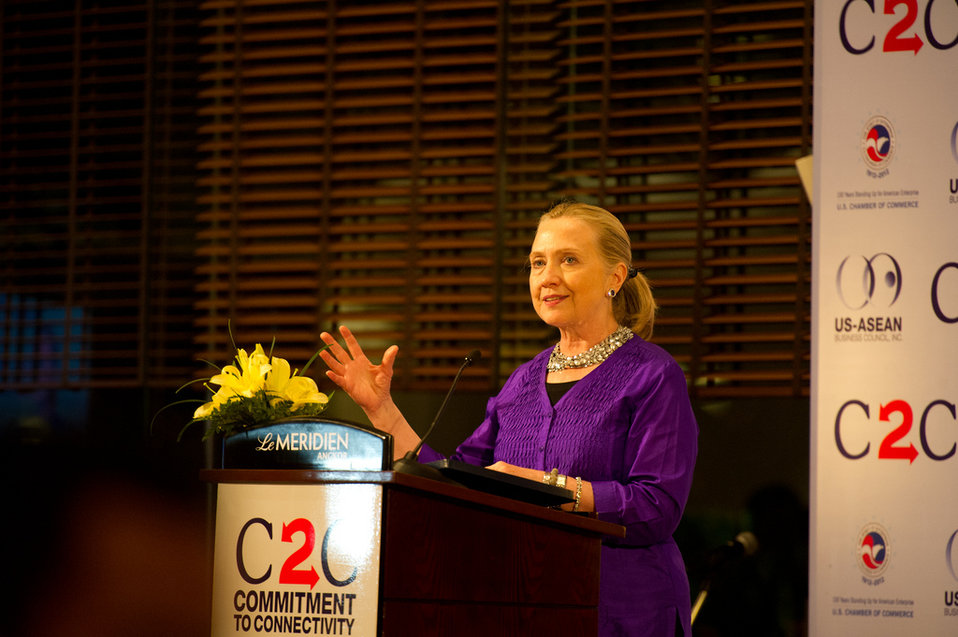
Secretary Clinton Delivers Remarks at U.S.-ASEAN Business Forum and Dinner

U.S. Secretary of State Hillary Rodham Clinton delivers remarks at the U.S.-ASEAN Business Forum and Dinner in Siem Reap, Cambodia, on July 13, 2012.